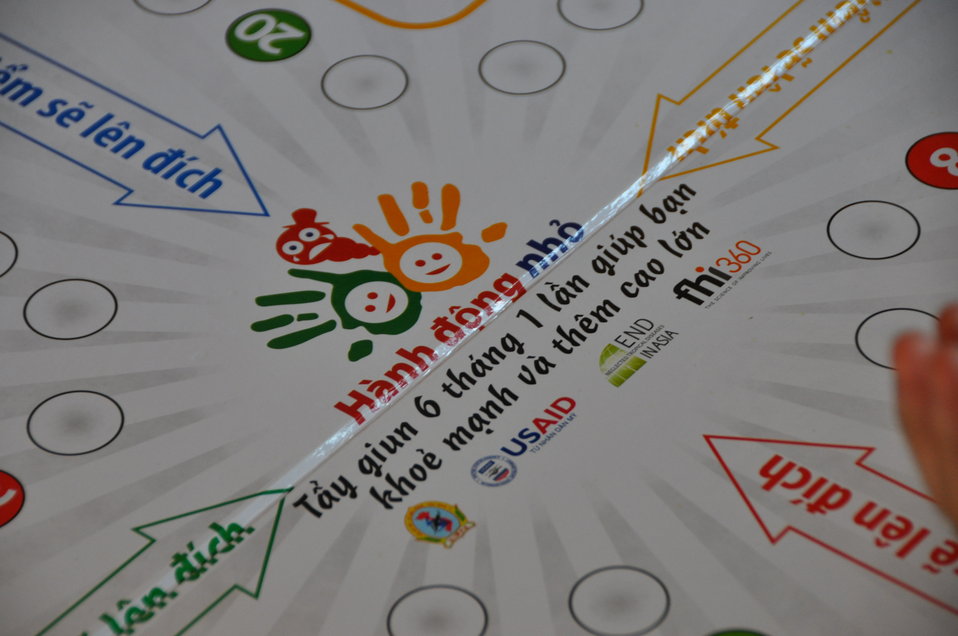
USAID supports deworming education and medication distribution in Bac Giang Province

May 20, 2013